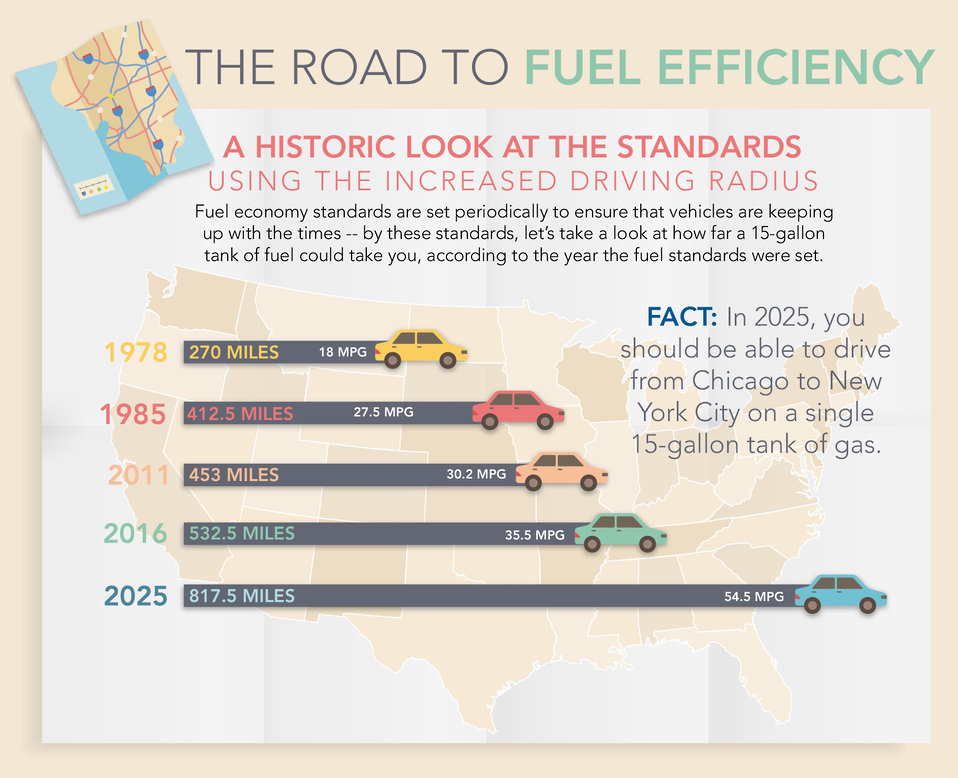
Infographic: The Road to Fuel Efficiency

Slide 1